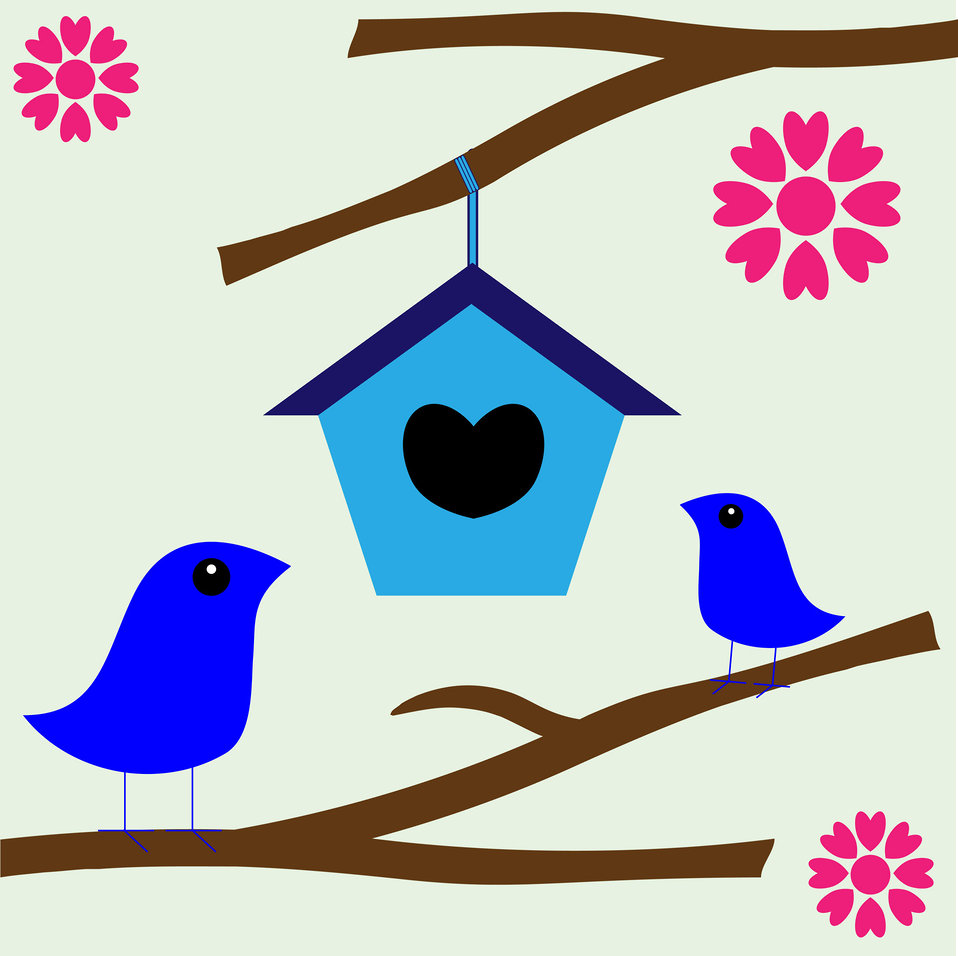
Cute birds love nest

Two cute birds with birdhouse and hearts background for scrapbooking.